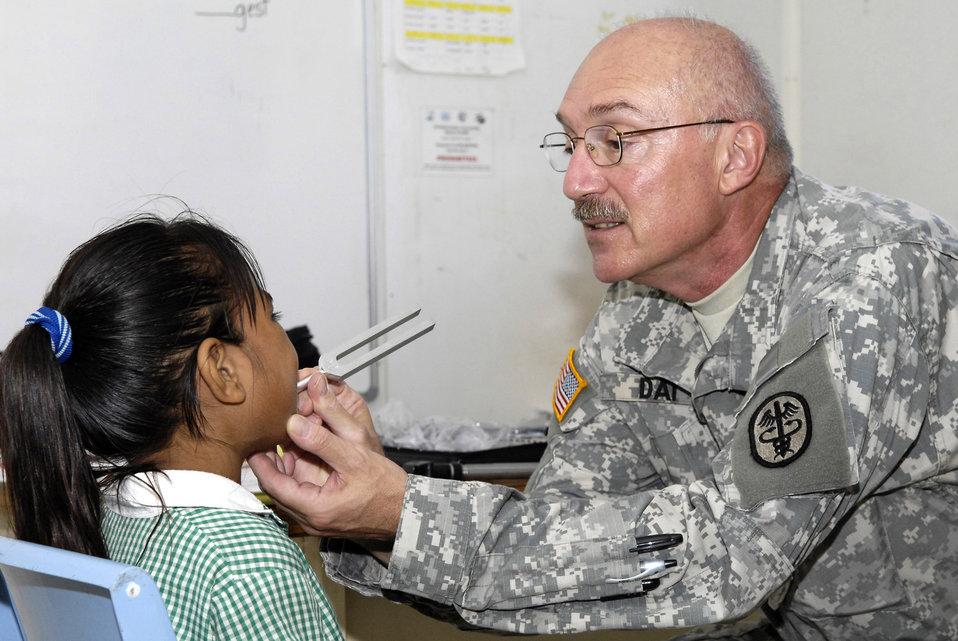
Joint team works to improve care in Nauru

Col. (Dr.) Joe Dai performs a basic hearing test on a Nauruan first grader July 21 on the island of Nauru. Colonel Dai is part of a 12-person, joint-force U.S. Pacific Command team deployed to the south Pacific Island of Nauru to provide assitance and training to the island's medical professionals. Colonel Dai is a pediatrician based out of Tripler Army Medical Center in Hawaii.